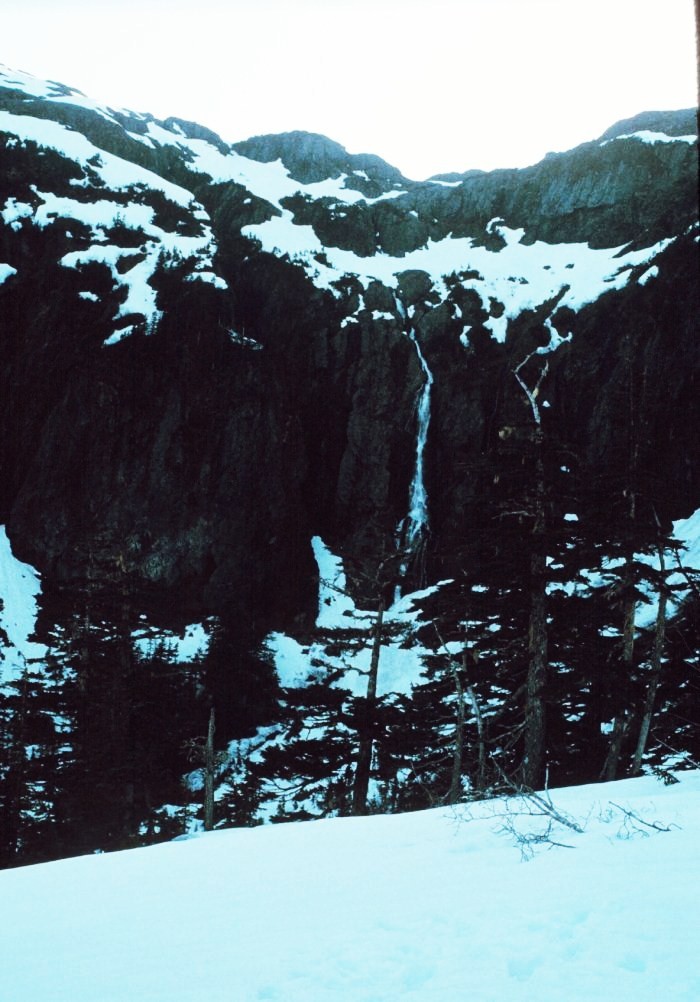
A waterfall in Prince William Sound